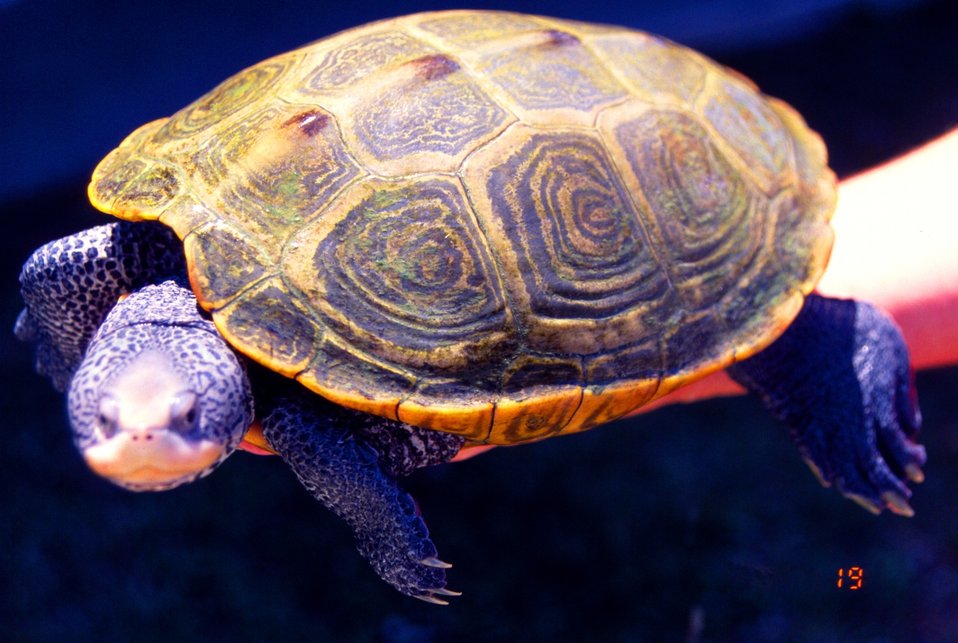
Adult female diamondback terrapin, Malachlenys terrapin.